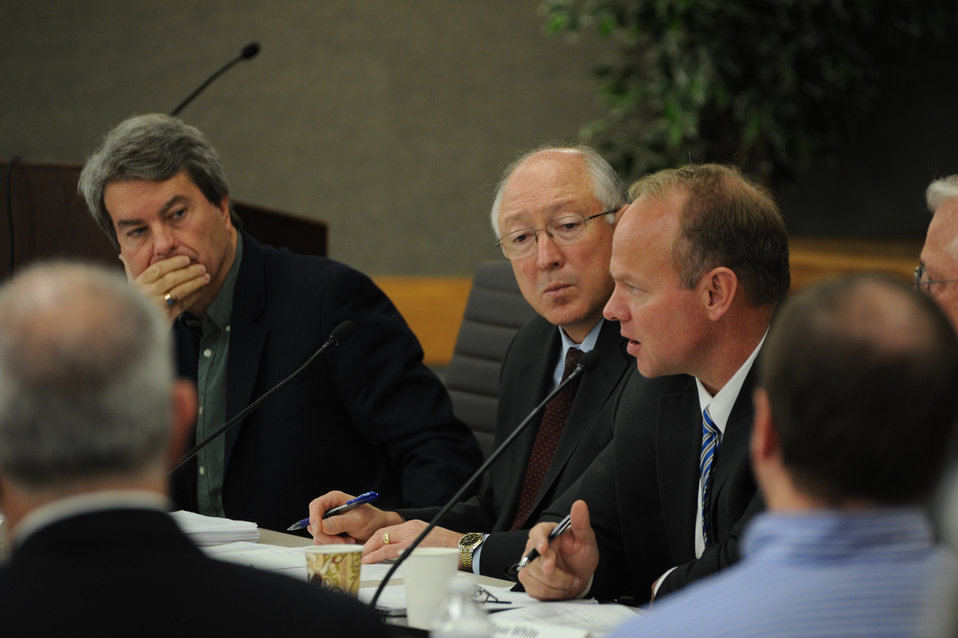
Wyoming - Sec. Salazar and Gov. Mead

Secretary Salazar and Dan Ashe Attended a Sage Grouse Meeting in Wyoming